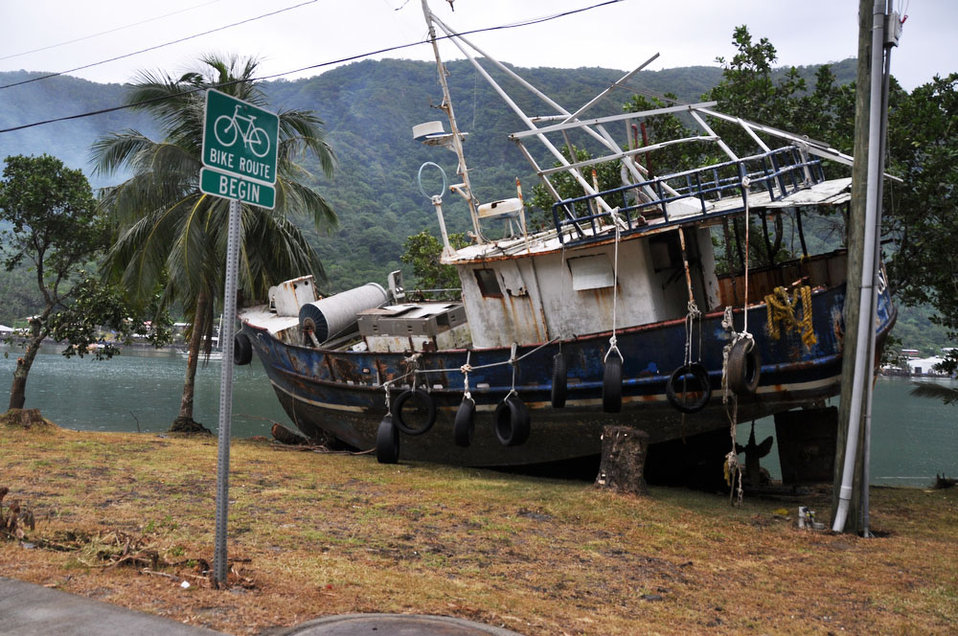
Hawaii Guard members assess damages in American Samoa

A boat sits upon land after a tsunami carried many items inland Oct. 1, 2009, in Pago Pago, American Samoa. The island nation was struck Sept. 29 by an 8.3 magnitude earthquake generating 15-foot waves and destroying whole villages.